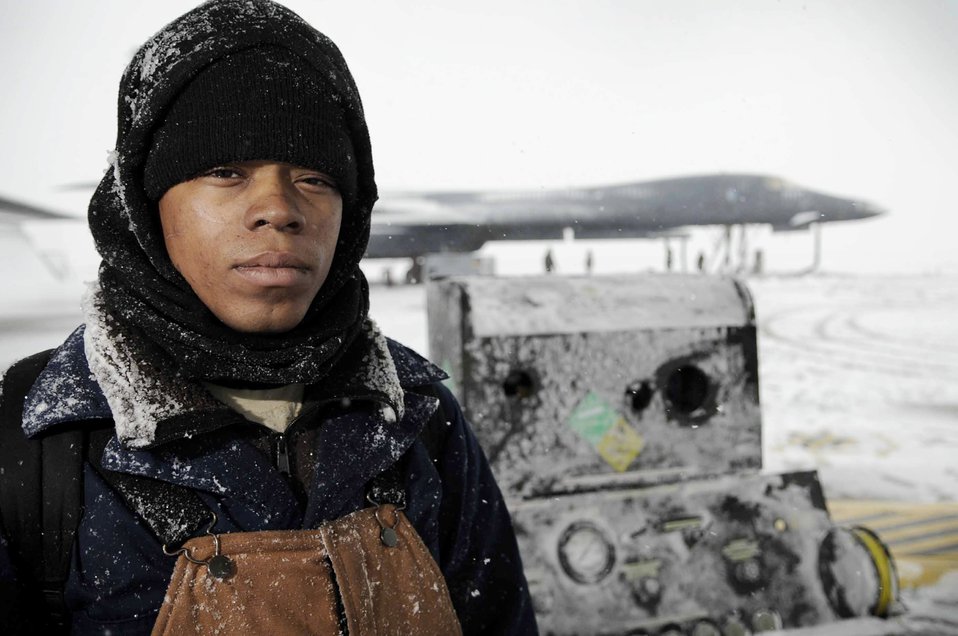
Cold and snow no obstacle for Ellsworth maintainers

Airman 1st Class Richard Redick braves inclement weather on the Ellsworth Air Force Base, S.D., flightline to help fulfill the Air Force mission of fly, fight and win Oct. 29, 2009. Airman Redick is a crew chief with the 28th Aircraft Maintenance Squadron and works in freezing temperature and strong winds to maintain operational readiness.